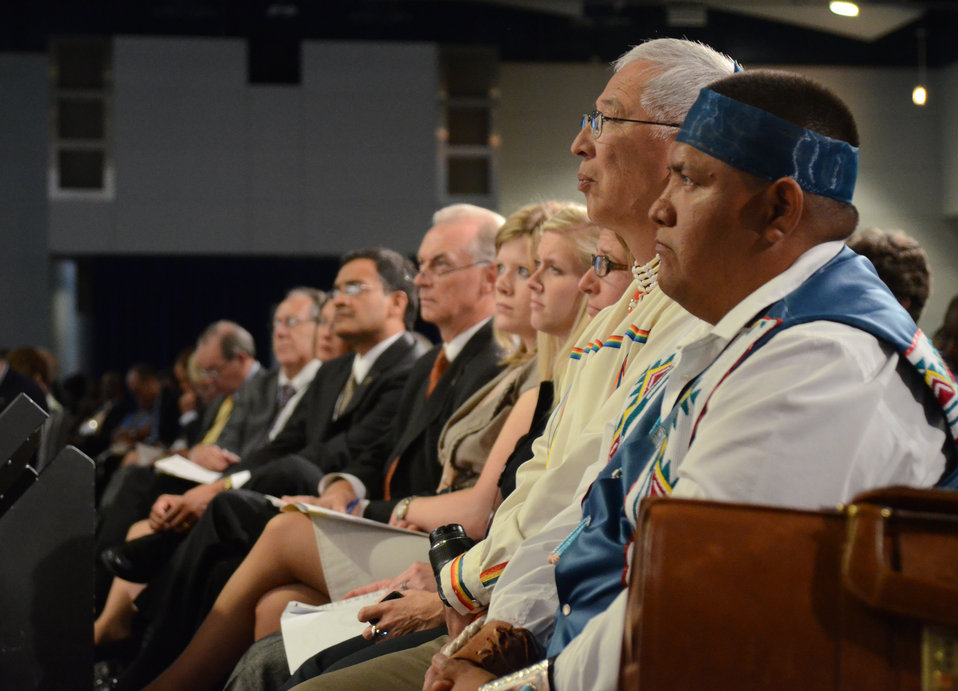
Audience members listen Agriculture Secretary Tom Vilsack speak at the Association of Land-Grant Universities (APLU) 150th Year Anniversary of the Morrill Act: Advancing the Legacy at the Ronald Reagan Building and International Trade Center in Washington D.C. on Tuesday, June 26, 2012.